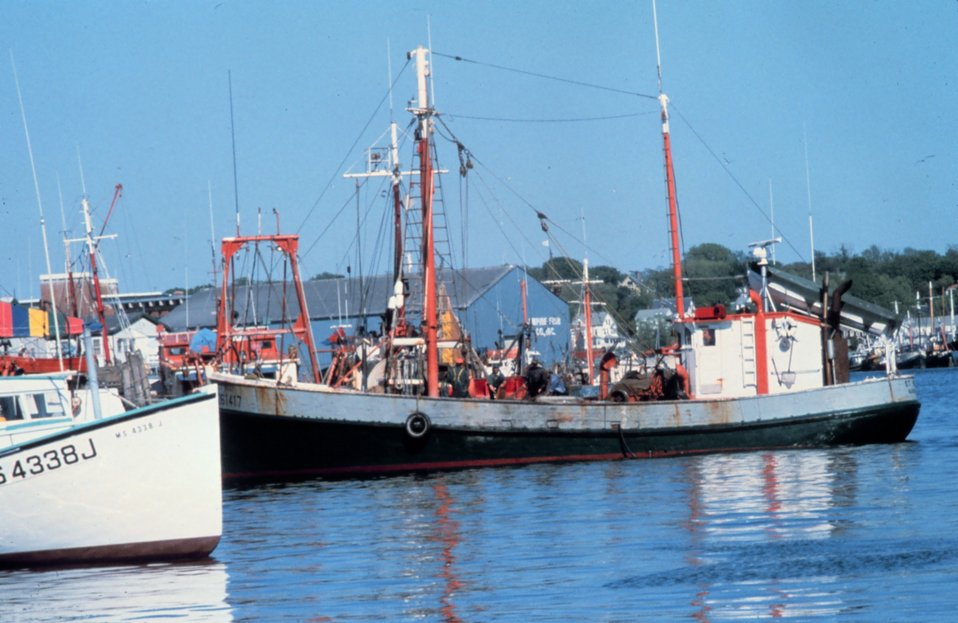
Gloucester waterfront